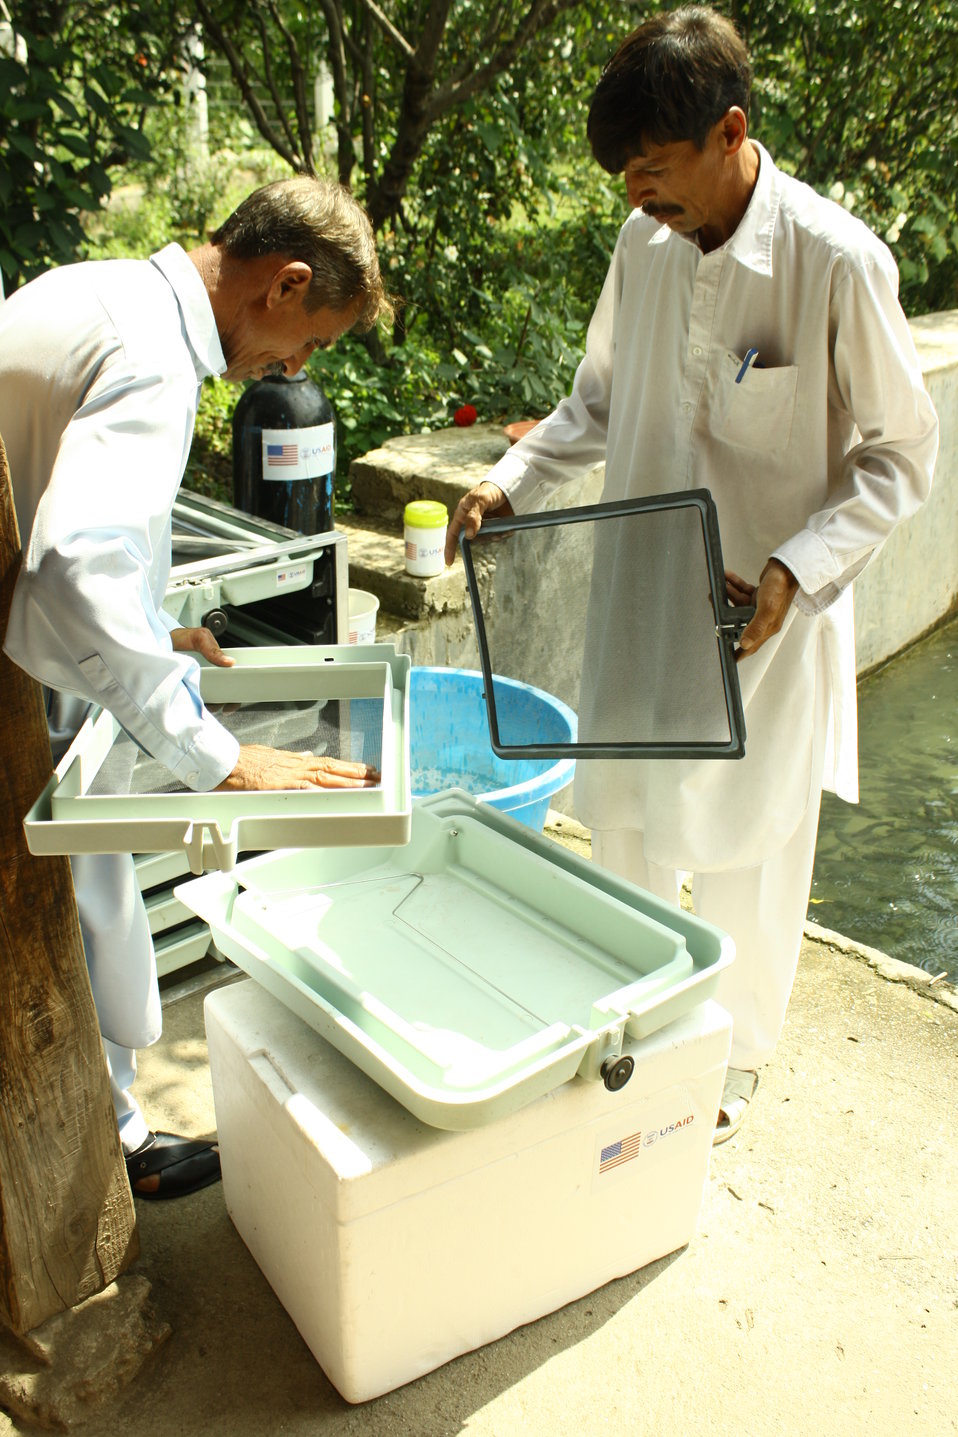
USAID helps rehabilitate hotels and fish farms in battered Swat Valley - 2

USAID provided fish egg incubators and other operating equipment to trout farms in Swat to help recover post-flood losses and set the tone for efficient future production.